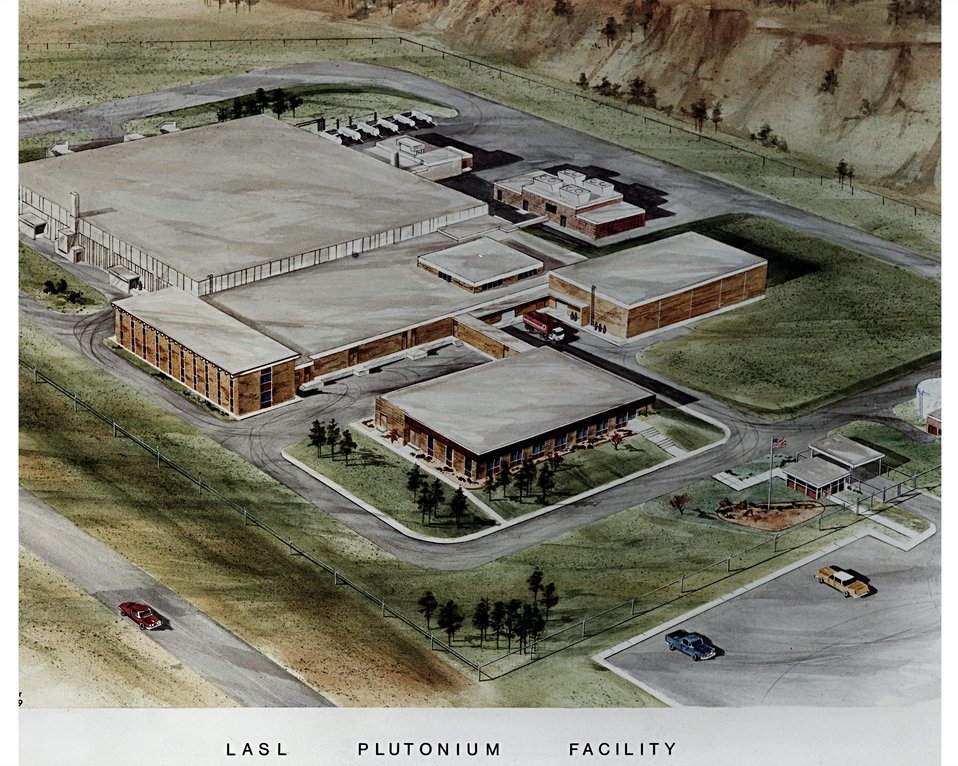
ARTIST'S CONCEPT OF AERIAL VIEW OF FACILITY.

THE PLUTONIUM FACILITIES AT THE TA-55 AT LANL ARE USED FOR WORK ON THE TWO MAJOR ISOTOPES, PU-239 AND PU-238, OF THE MAN-MADE ELEMENT PLUTONIUM. TA-55 PROGRAMS HAVE ENCOMPASSED MANY PHASES OF PLUTONIUM RESEARCH AND DEVELOPMENT. OPERATIONS BEGAN IN APRIL, 1978.